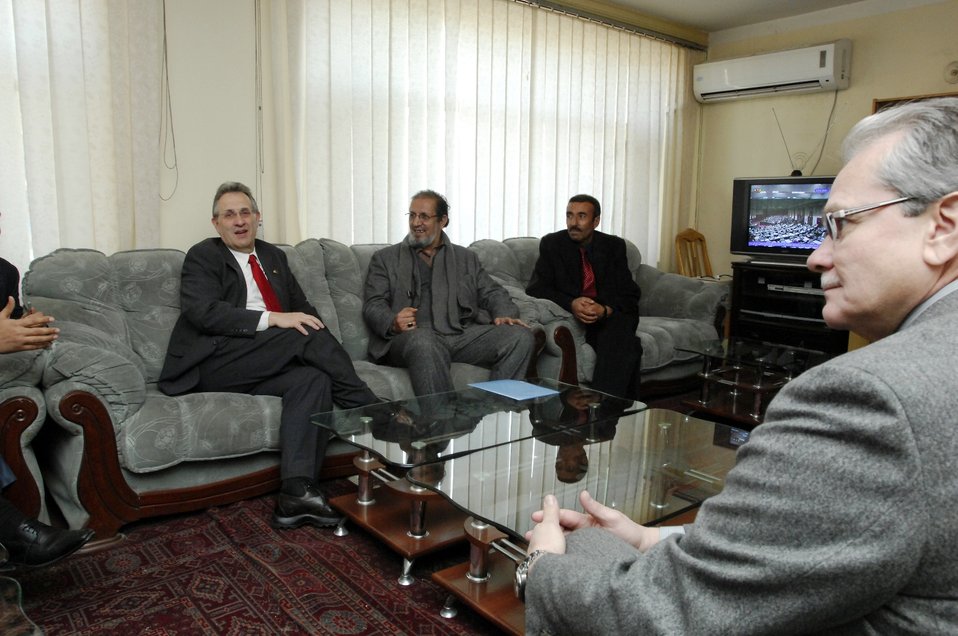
Care00 (1)